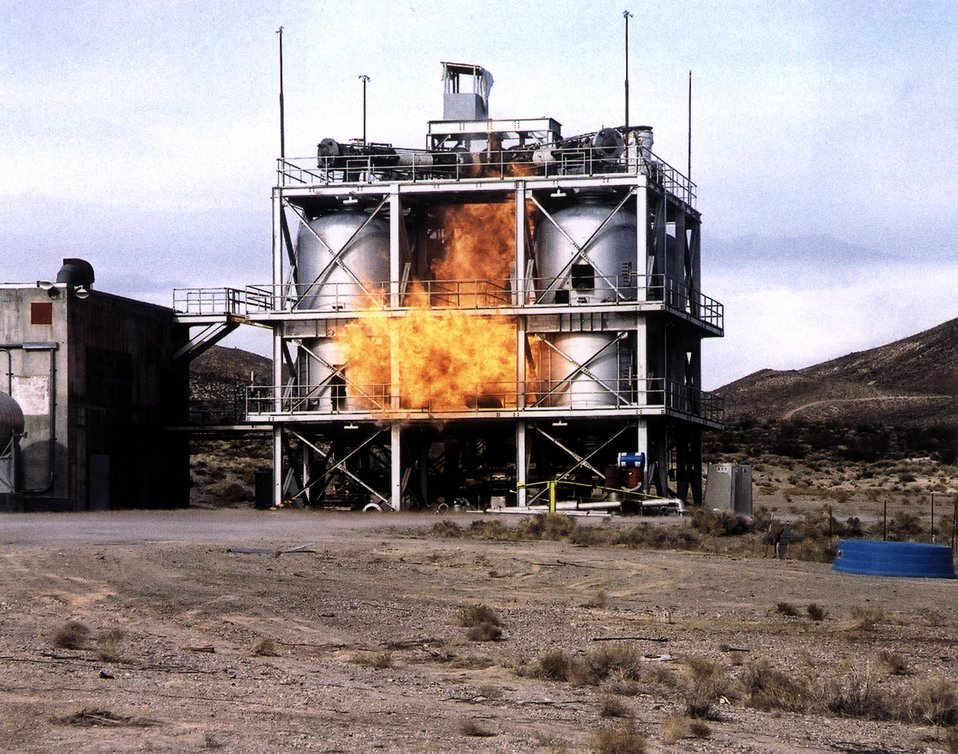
TEST EXPLOSION AT THE NEVADA TEST SITE.

THIS TEST EXPLOSION IS PART OF A TRAINING EXERCISE AT THE NATIONAL CENTER FOR COMBATING TERRORISM.